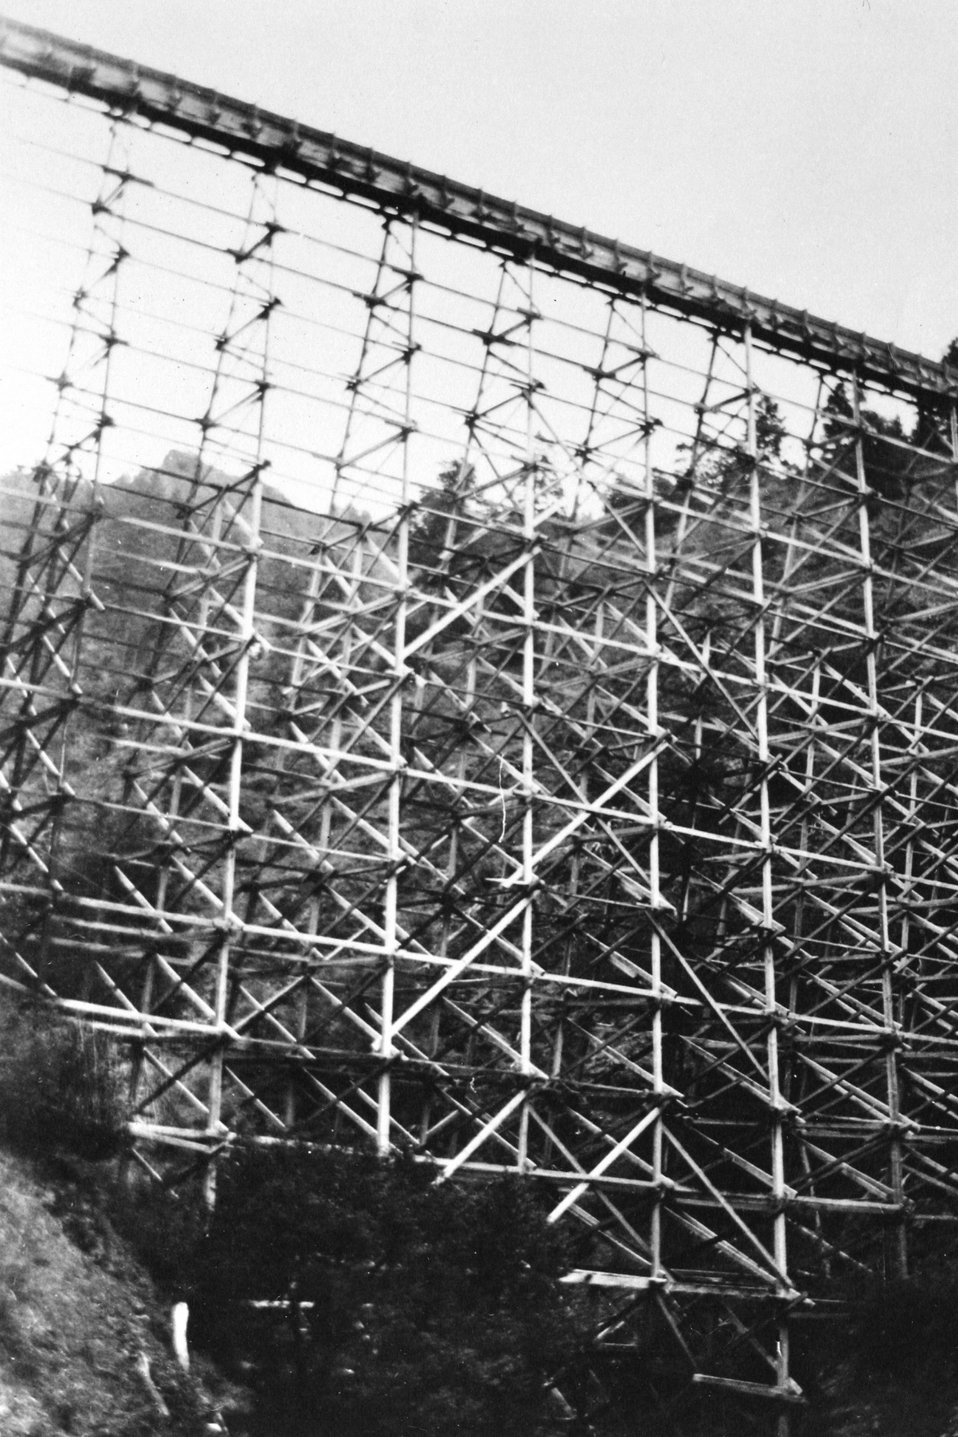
Red River Milling and Mine Co. flume at Mule Creek C. 1910